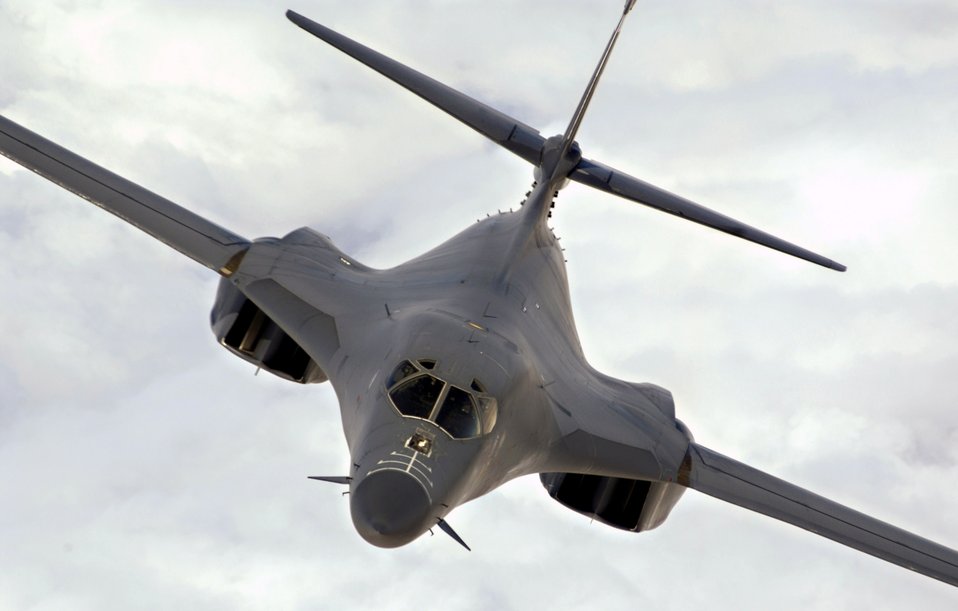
April 17 airpower summary: B-1B deters enemy

An Air Force B-1B Lancer flies a mission over Afghanistan. The B-1B provides close-air support for coalition forces and can rapidly deliver massive quantities of precision and non-precision weapons against any adversary.